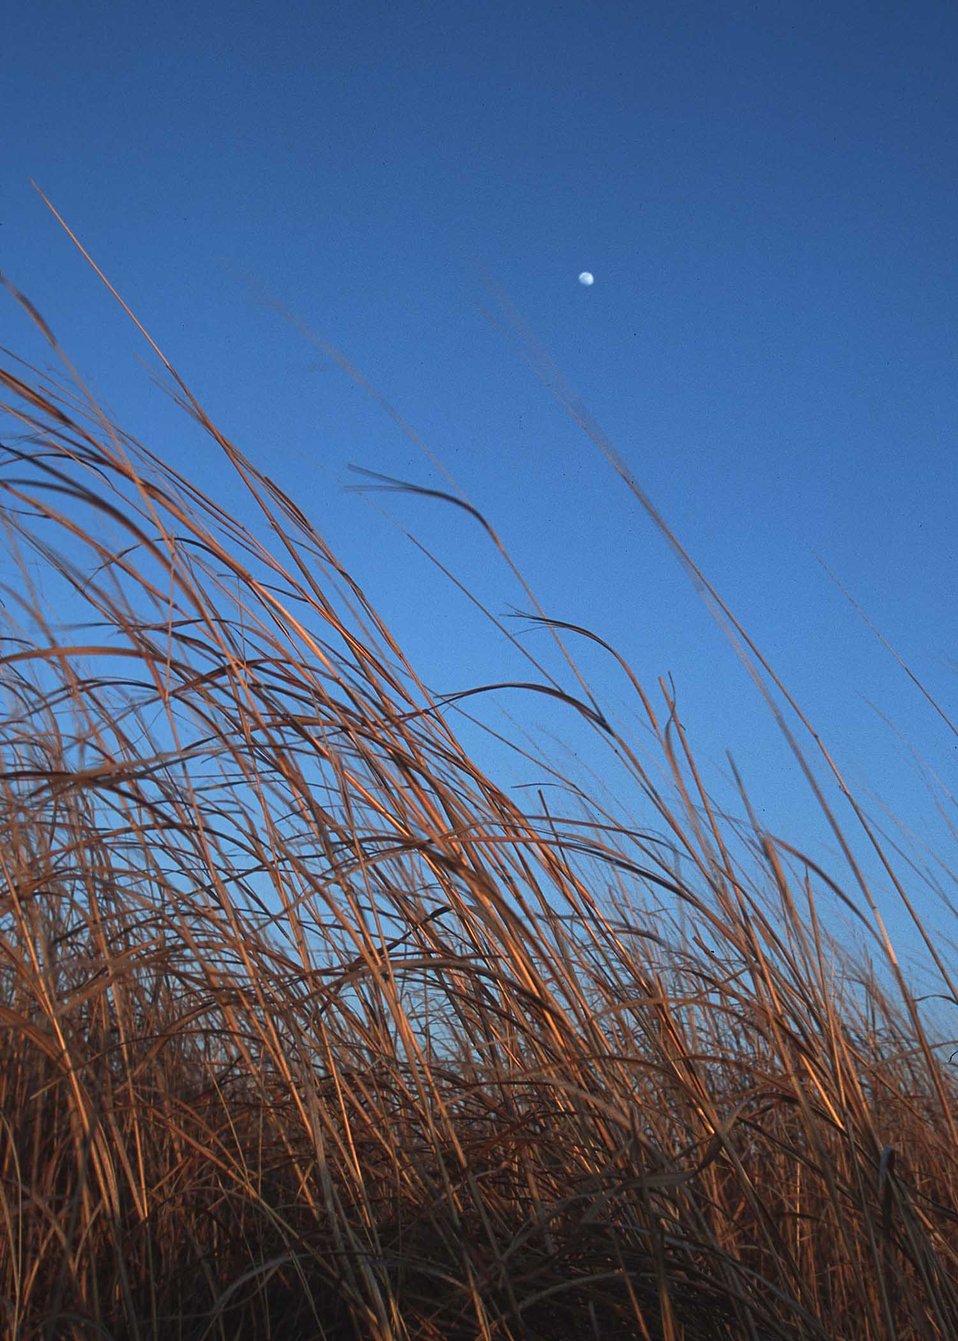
Prairie species seeded under the Conservation Reserve Program. Kansas.